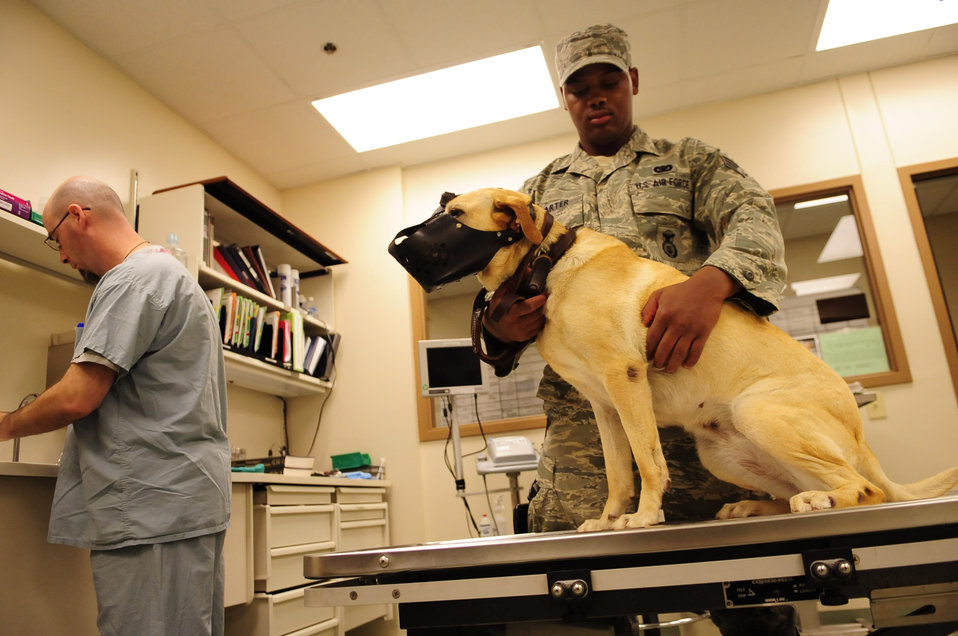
Officials outline adoption process for military working dogs

Mr. Rufus Fredrick and Senior Airman Tommy Carter conduct a weekly checkup on a military working dog at Lackland Air Force Base, Texas, recently. To reassure all military working dogs are in proper health, each dog is given a weekly checkup.